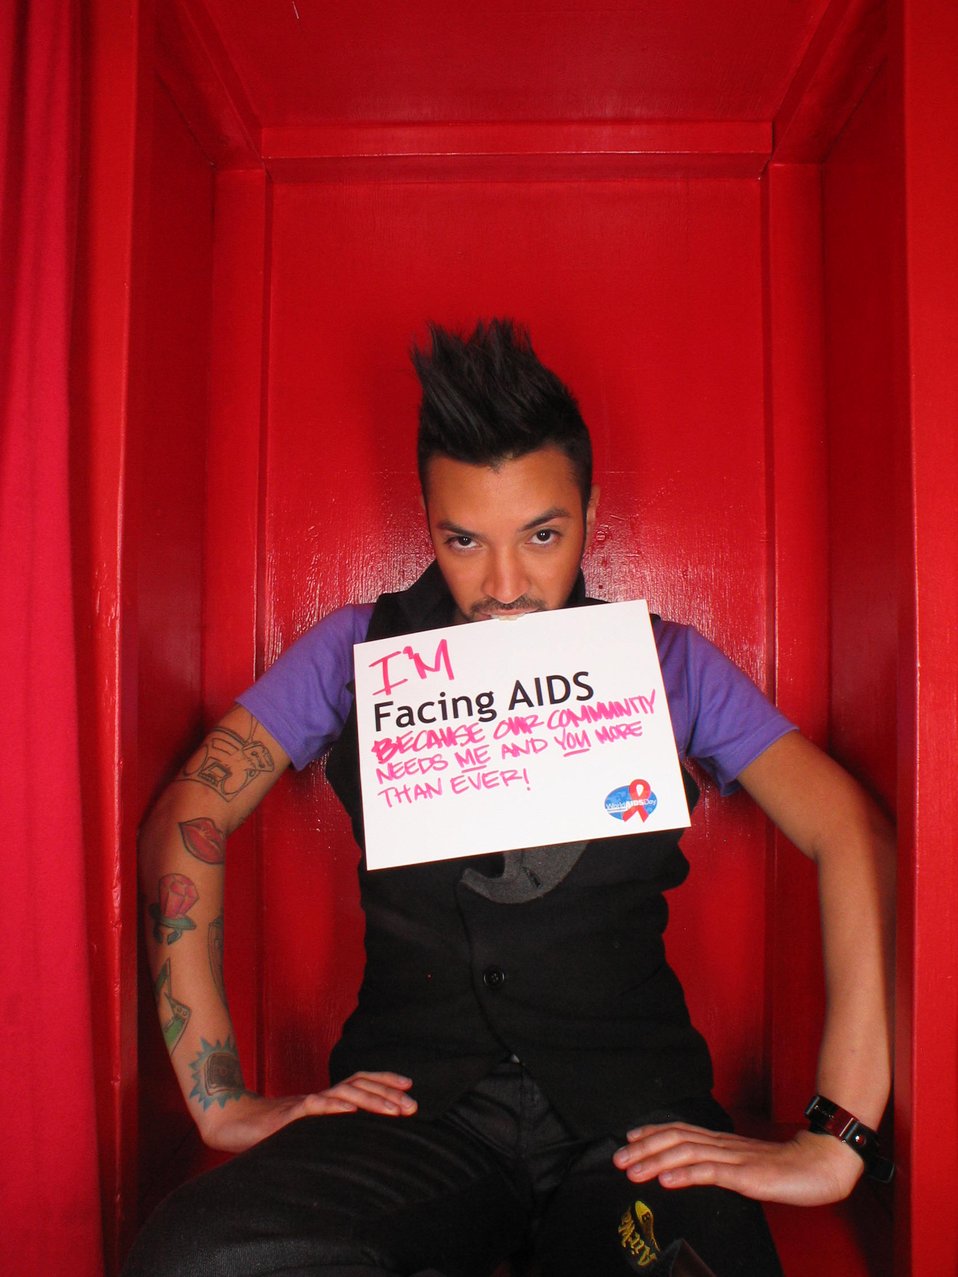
I'm Facing AIDS because our community needs and and you more than ever!